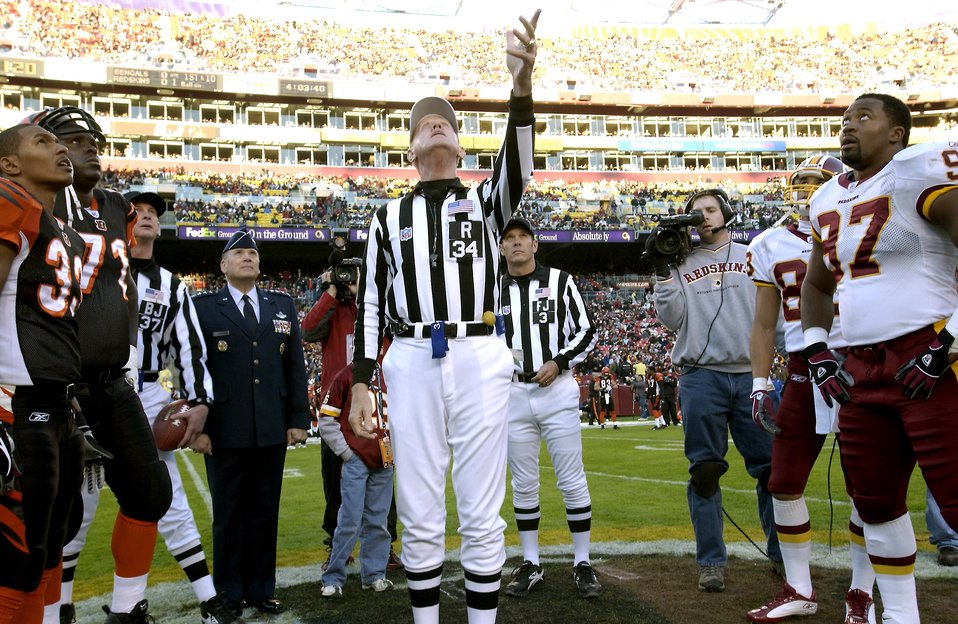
Air Force participates in Veterans Day tribute at Redskins' game

LANDOVER, Md. -- Air Force Chief of Staff Gen. John P. Jumper (center left) was on hand for the opening coin toss at the Washington Redskins vs. Cincinnati Bengals football game here Nov. 14. It was part of a Veterans Day salute to the Air Force.